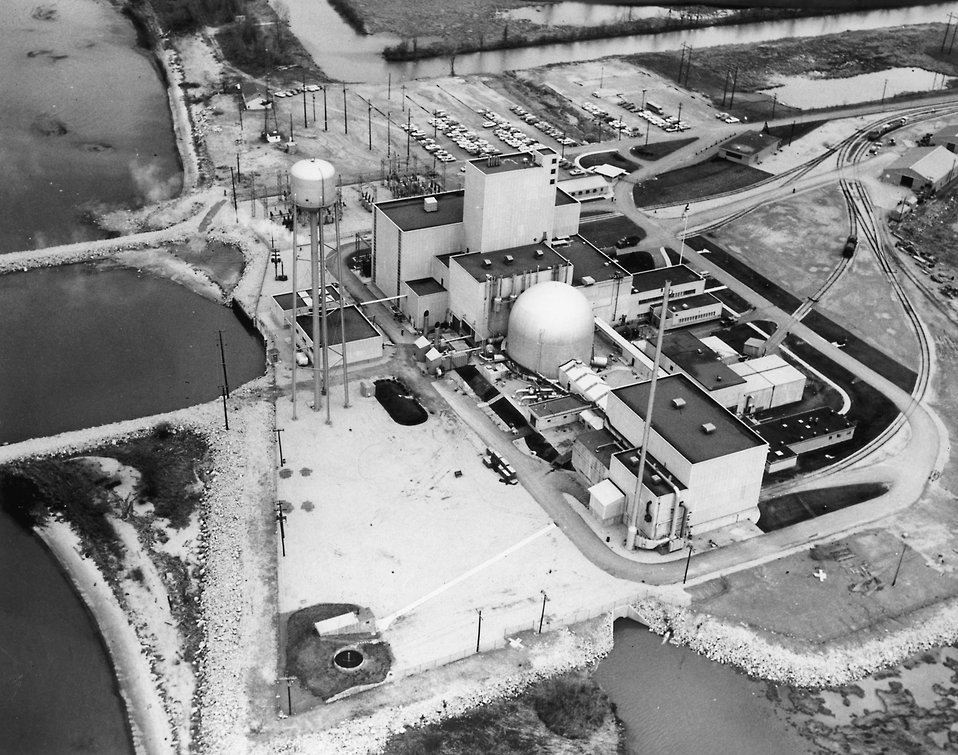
The world's first large 'breeder' nuclear power plant is the Enrico Fermi Unit 1, Which began operations in 1965. Circa 1971.